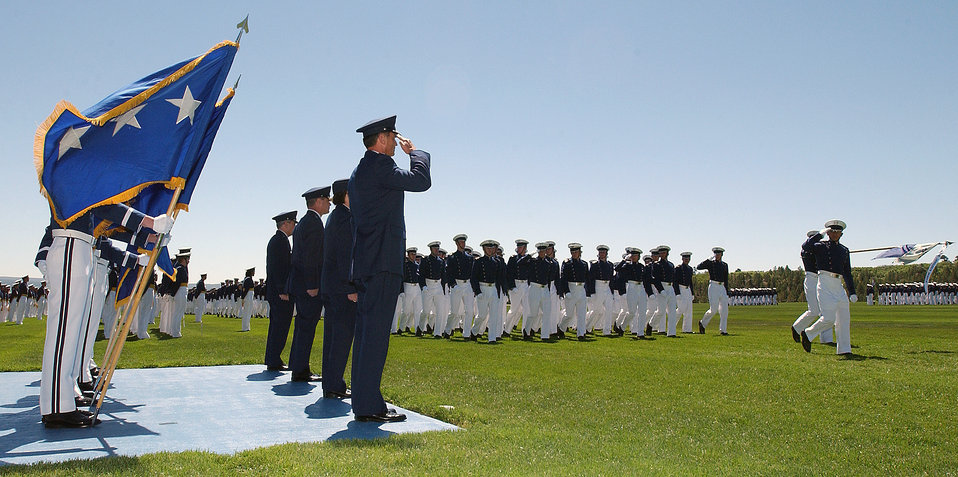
Pass in review

U.S. AIR FORCE ACADEMY, Colo. -- The Class of 2004 marches past Lt. Gen. John Rosa, U.S. Air Force Academy superintendent, during the graduation parade at Stillman Parade Field here June 1. A highlight of the parade was a flyover by an F/A-22 Raptor.